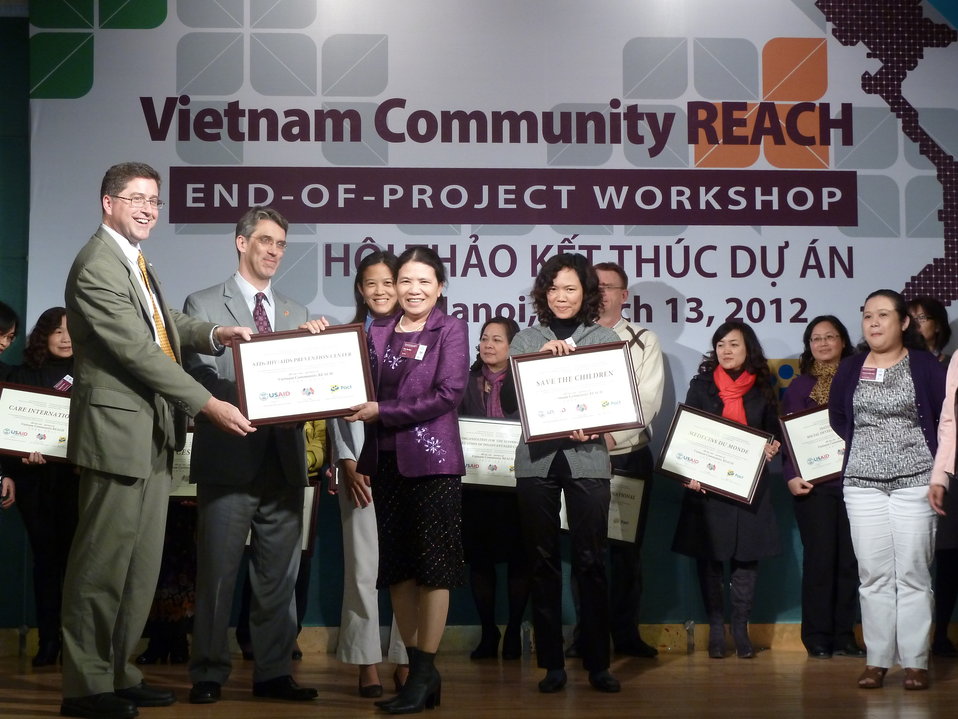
USAID, PEPFAR, and Pact award certificates to local and international partners for their work in addressing HIV in Vietnam

Community REACH project close-out with USAID and implementing partner, Pact